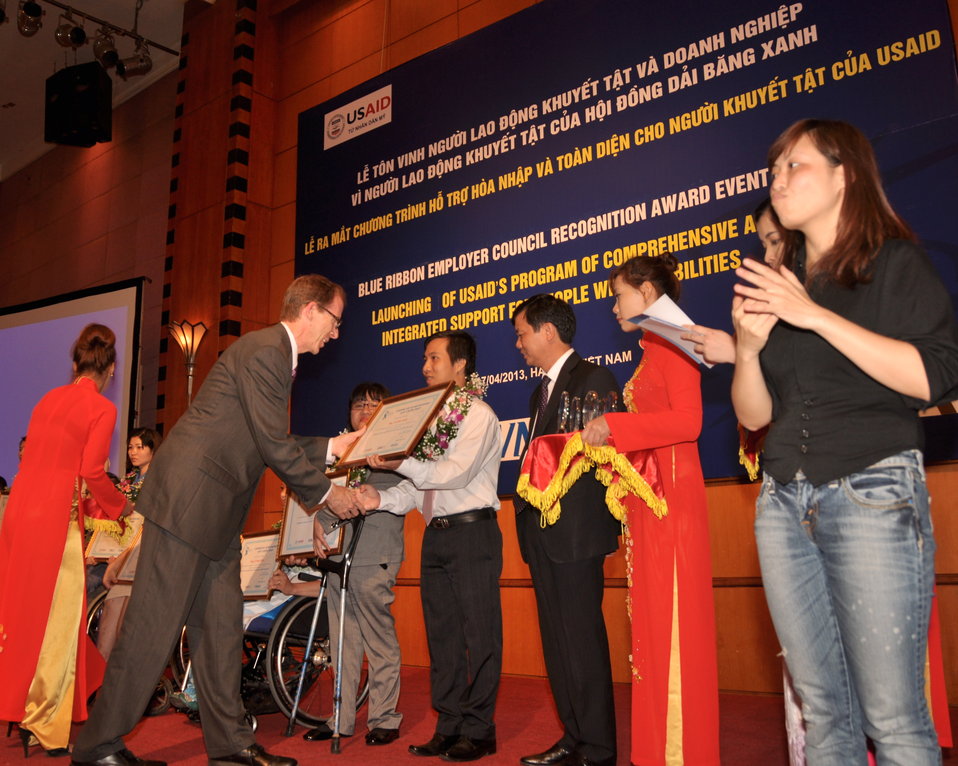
USAID Mission Director Joakim Parker awards employees with disabilities

Hanoi, April 17, 2013